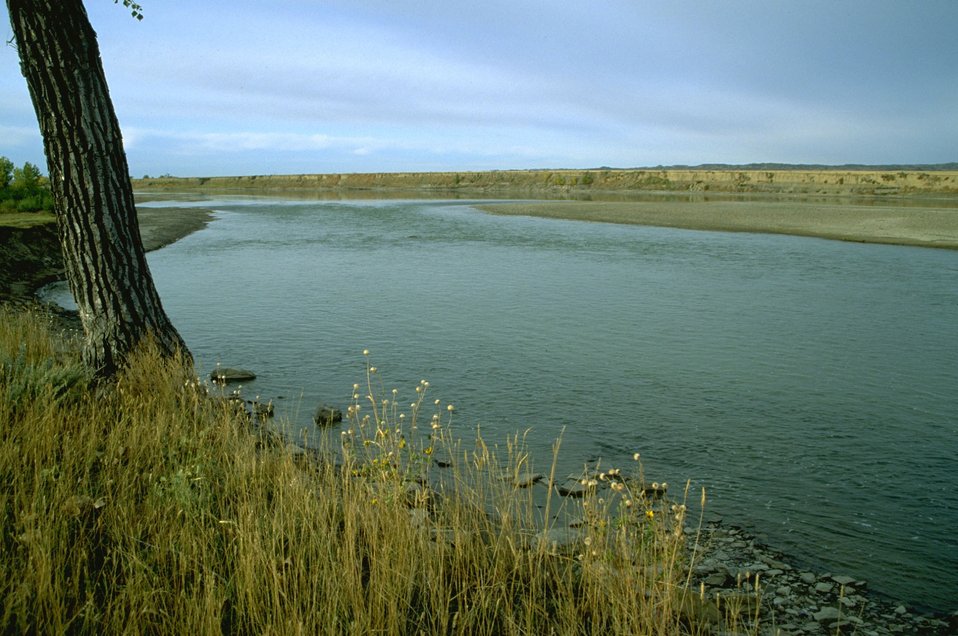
Yellowstone River